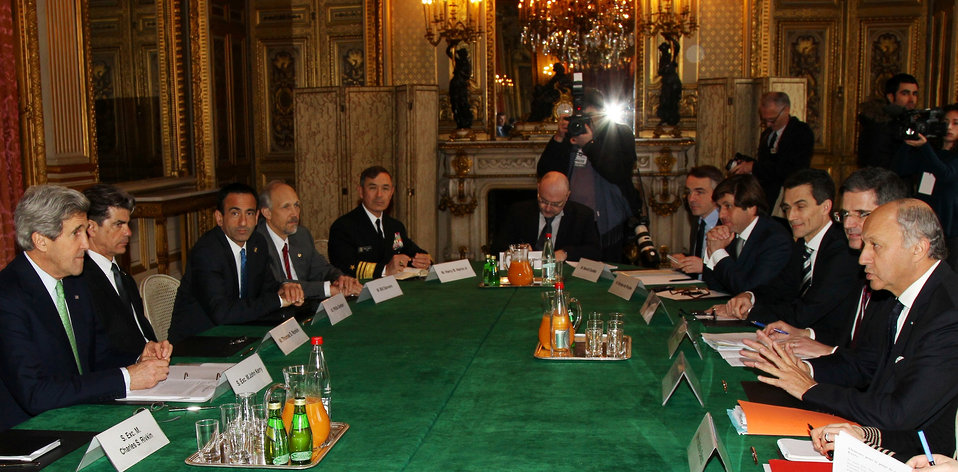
Secretary Kerry Meets With French Foreign Minister Fabius

U.S. Secretary of State John Kerry meets with French Foreign Minister Laurent Fabius in Paris, France, on February 27, 2013.